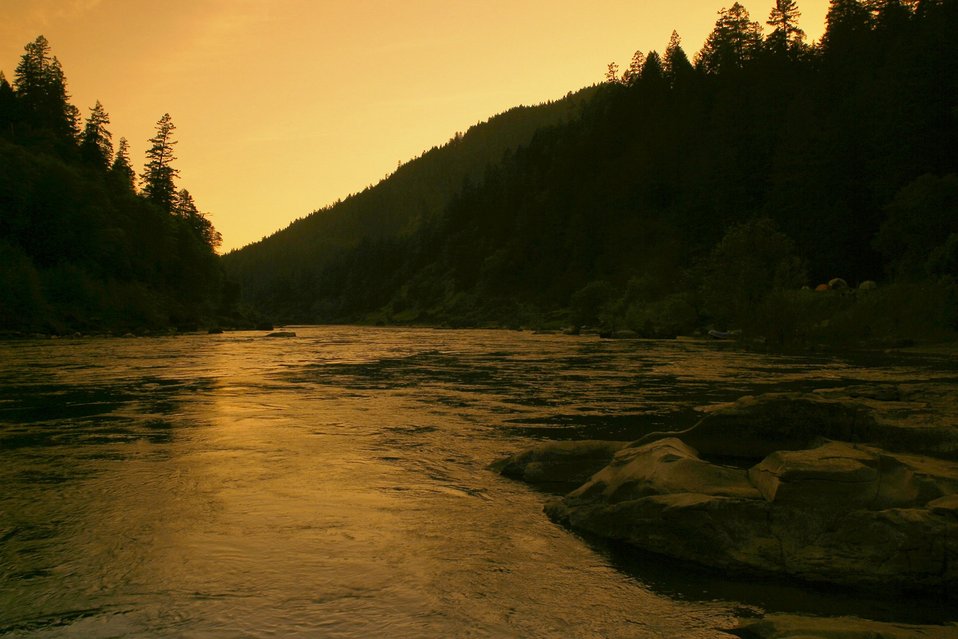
Wild section of the Rogue River from Grave Creek to Foster Bar May 19 to May 22.